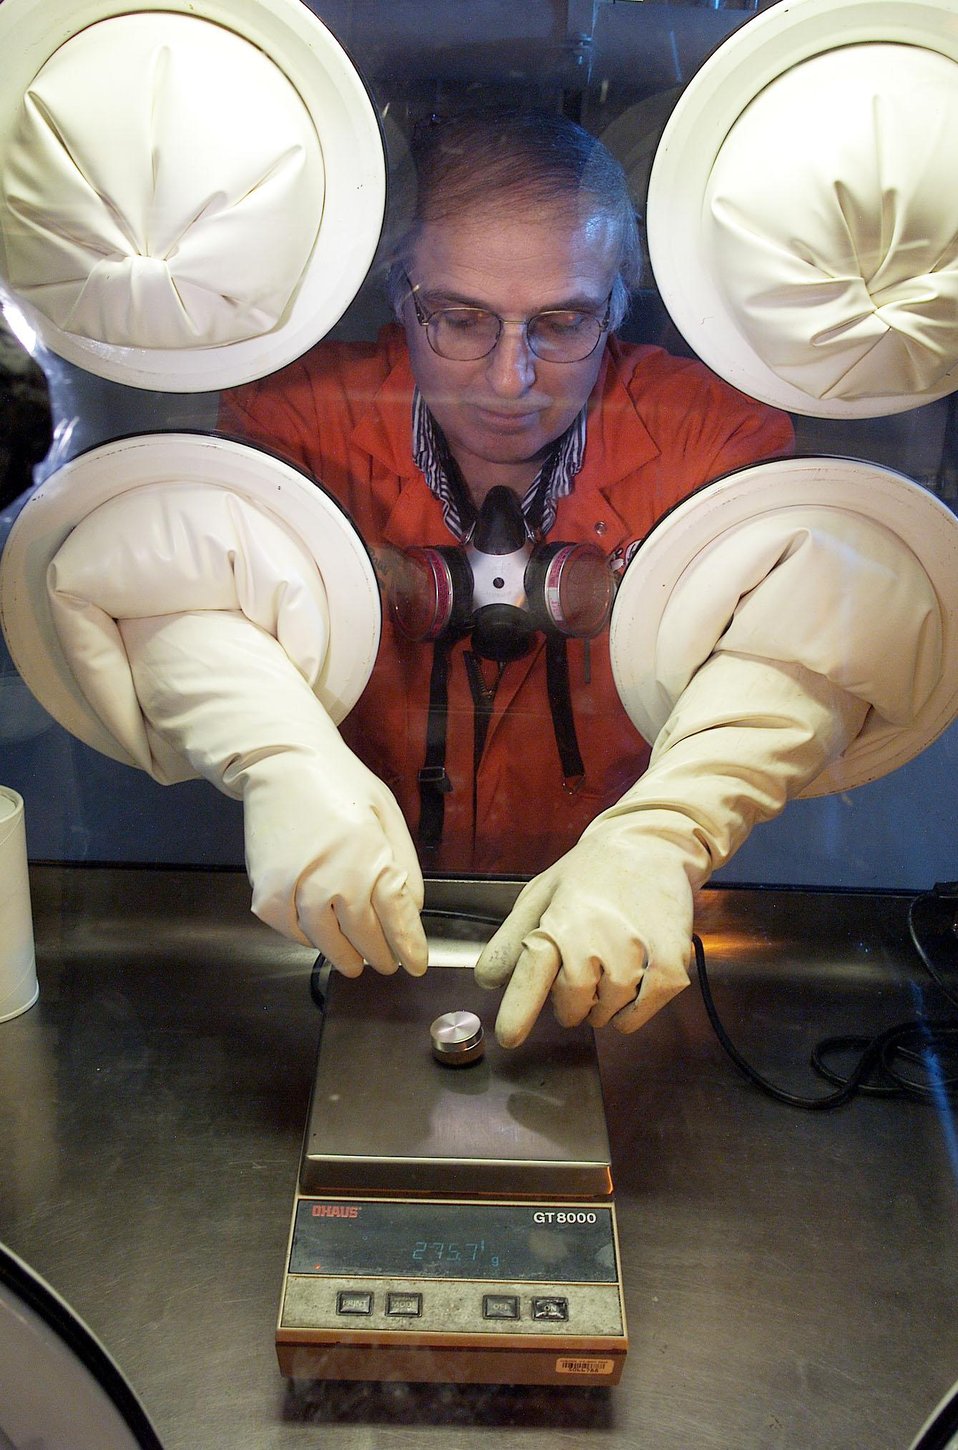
PLUTONIUM TARGET FOR SHOCK PHYSICS EXPERIMENTS BEING WEIGHED IN THE PLUTONIUM FACILITY AT LAWRENCE LIVERMORE NATIONAL LABORATORY.

THE PLUTONIUM FACILITY IS PART OF LLNL'S SUPERBLOCK, WHICH IS HOME TO ONE OF TWO DEFENSE PLUTONIUM RESEARCH AND DEVELOPMENT FACILITIES IN THE U.S. THE SUPERBLOCK HOUSES MODERN EQUIPMENT FOR RESEARCH AND ENGINEERING TESTING OF NUCLEAR MATERIALS. THE PLUTONIUM FACILITY IS THE LARGEST BUILDING IN THE COMPLEX. MOST OF THE WORK AT SUPERBLOCK RELATES EITHER TO THE STEWARDSHIP OF OUR NATION'S ARSENAL OF NUCLEAR WEAPONS OR TO FINDING SAFE WAYS TO DISPOSE OF SURPLUS PLUTONIUM COMPONENTS.